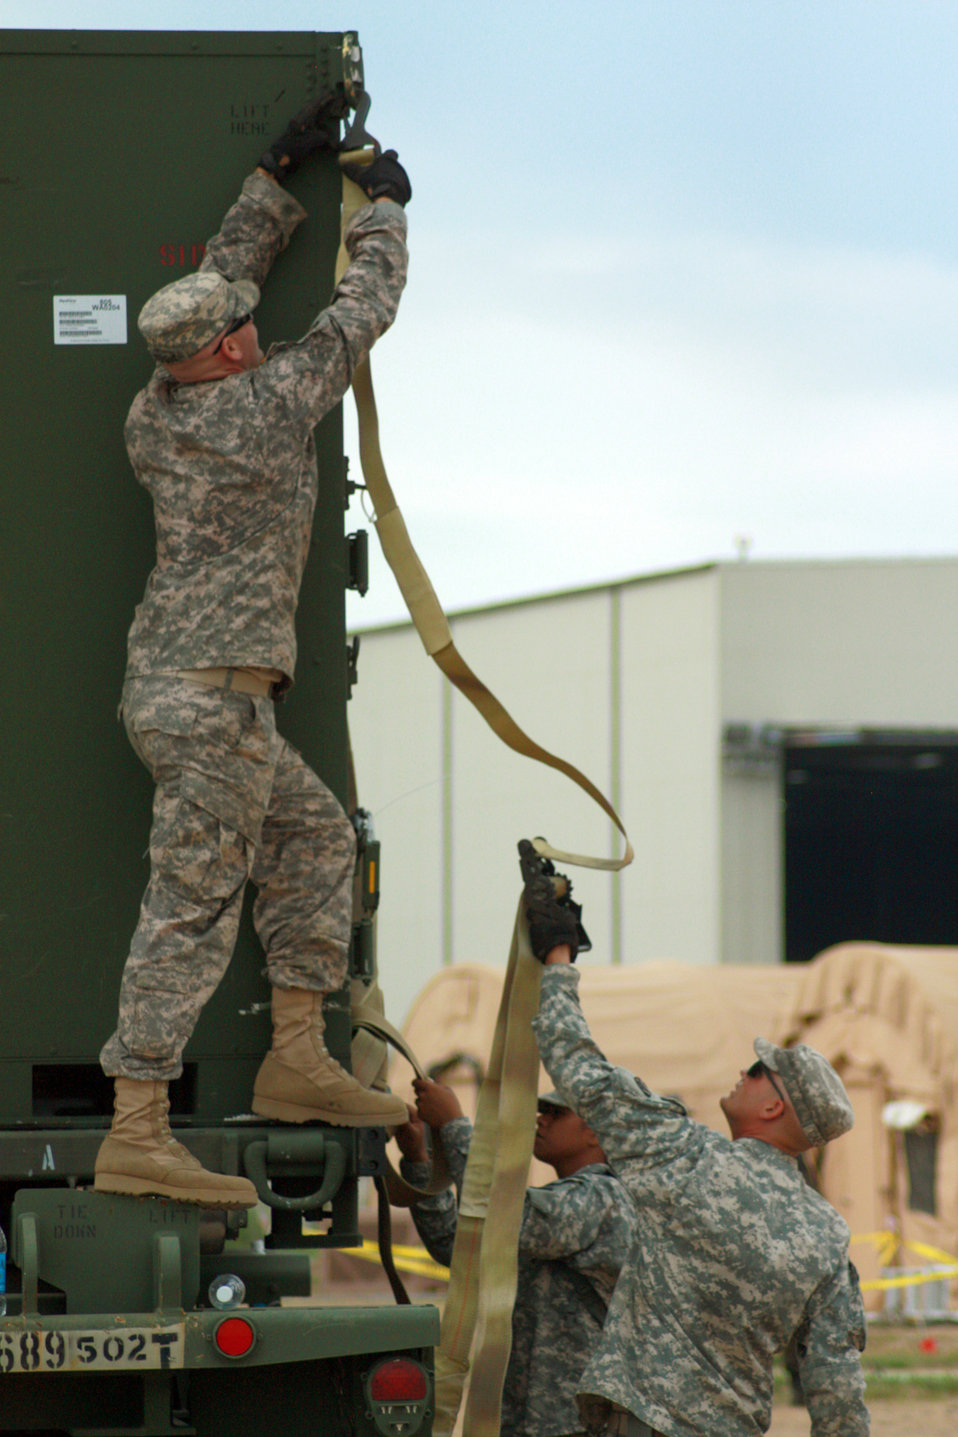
Eagle Flag

Soldiers of the 689th Rapid Port Opening Element load a pallet of food and water to be distributed to a simulated local village needing assistance during exercise Eagle Flag July 27, 2010, at Joint Base McGuire-Dix-Lakehurst, N.J.